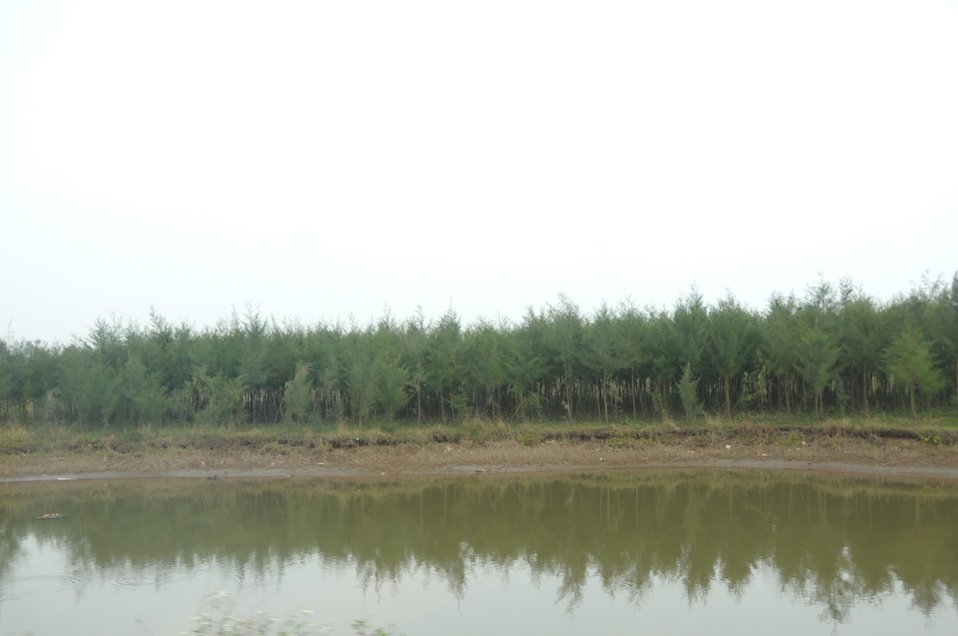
Coastal forests in Nam Dinh Province.

Quat Lam, Nam Dinh. January 16, 2014.